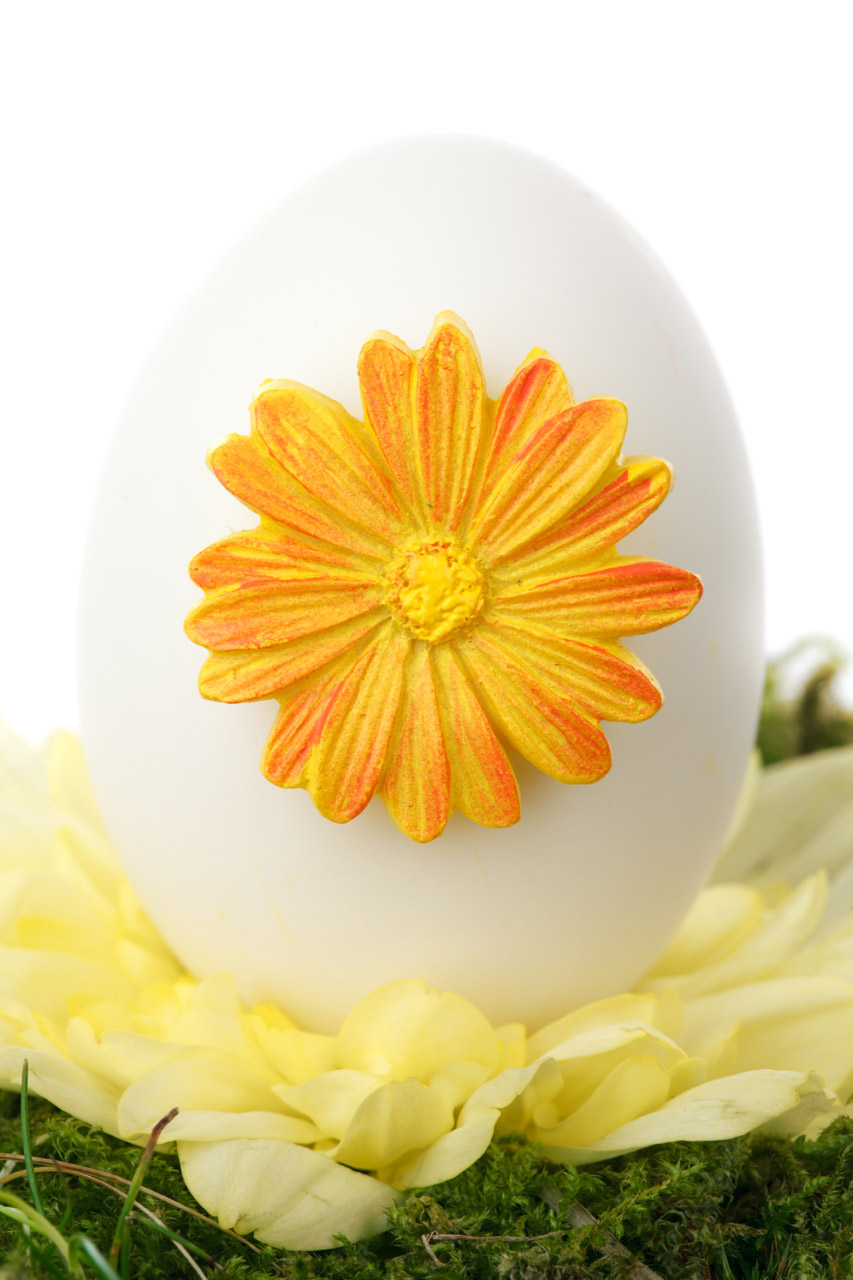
Decorated easter egg

White easter egg with spring decoration isolated on white background.